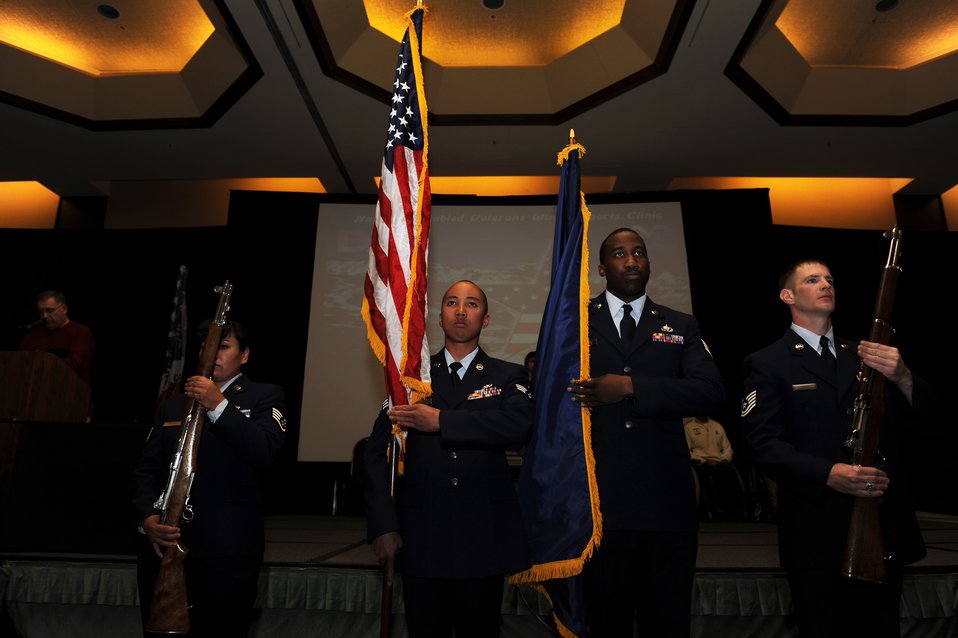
Winter Sports Clinic Opening Ceremony

Airmen from Luke Air Force Base, Ariz., post the colors during the opening ceremony March 28, 2010, for the 24th National Disabled American Veterans Winter Sports Clinic in Snowmass Village, Colo. The event is sponsored by the Department of Veterans Affairs and Disabled American Veterans.